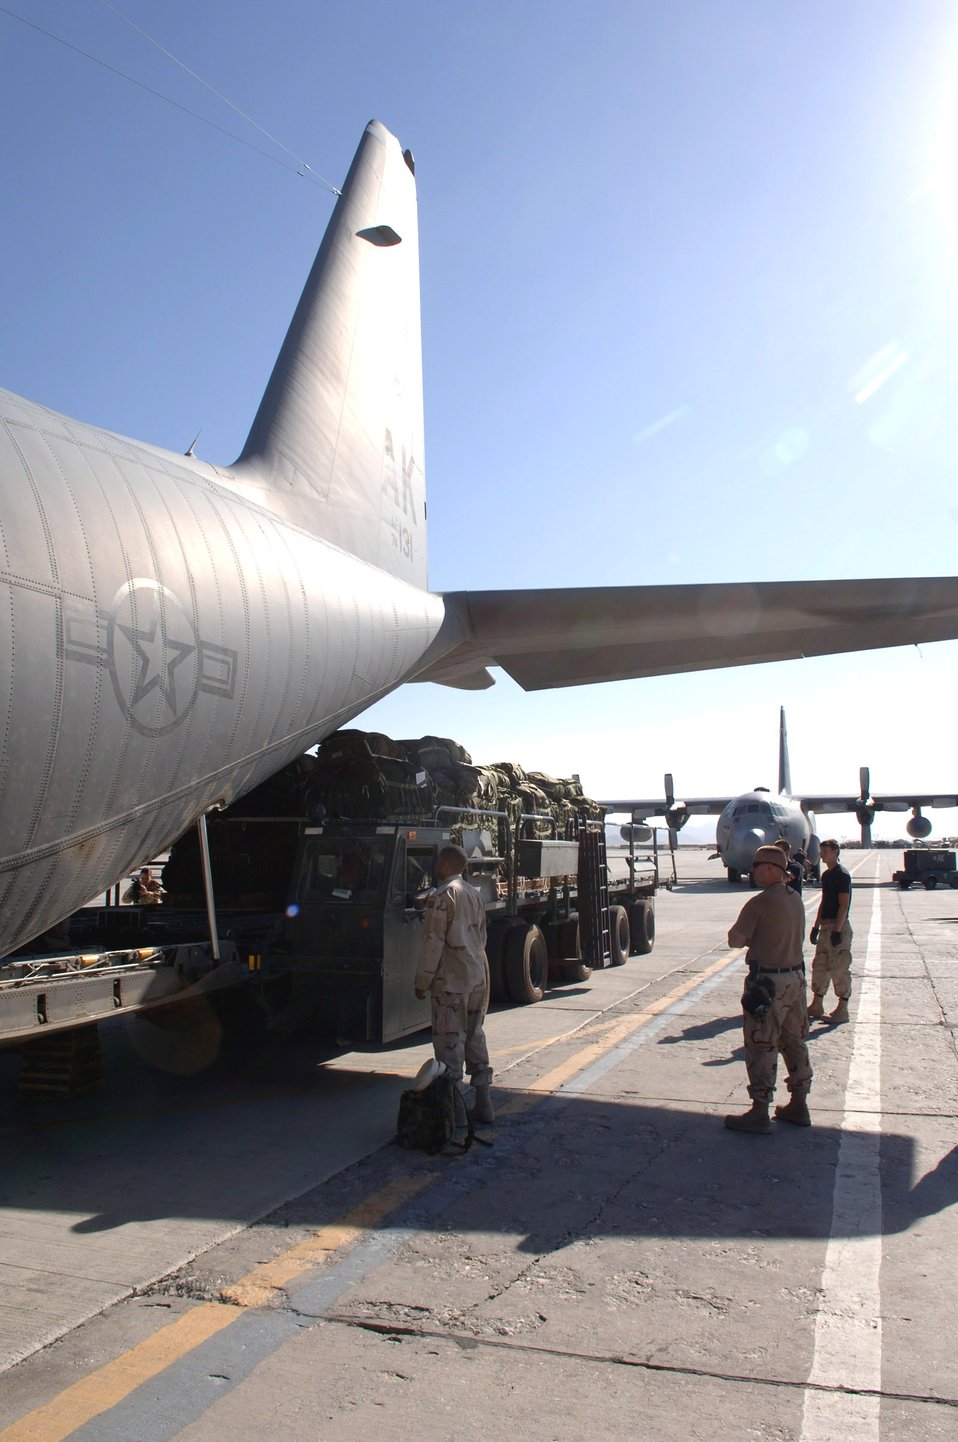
Operation Enduring Freedom

BAGRAM AIR BASE, Afghanistan - Airmen load a C-130 Hercules from the 517th Airlift Squadron with 14 pallets of relief supplies bound for Pakistan. The flight was the first air drop mission into the country, devastated by an Oct. 8 by a magnitude 7.6 earthquake. Soldiers and Airmen here assemble approximately 20,000 pounds of food, blankets, and supplies for the drop. To date, more than 180,000 pounds of food, water, cots and medical supplies have been flown out of Bagram headed for Pakistan.